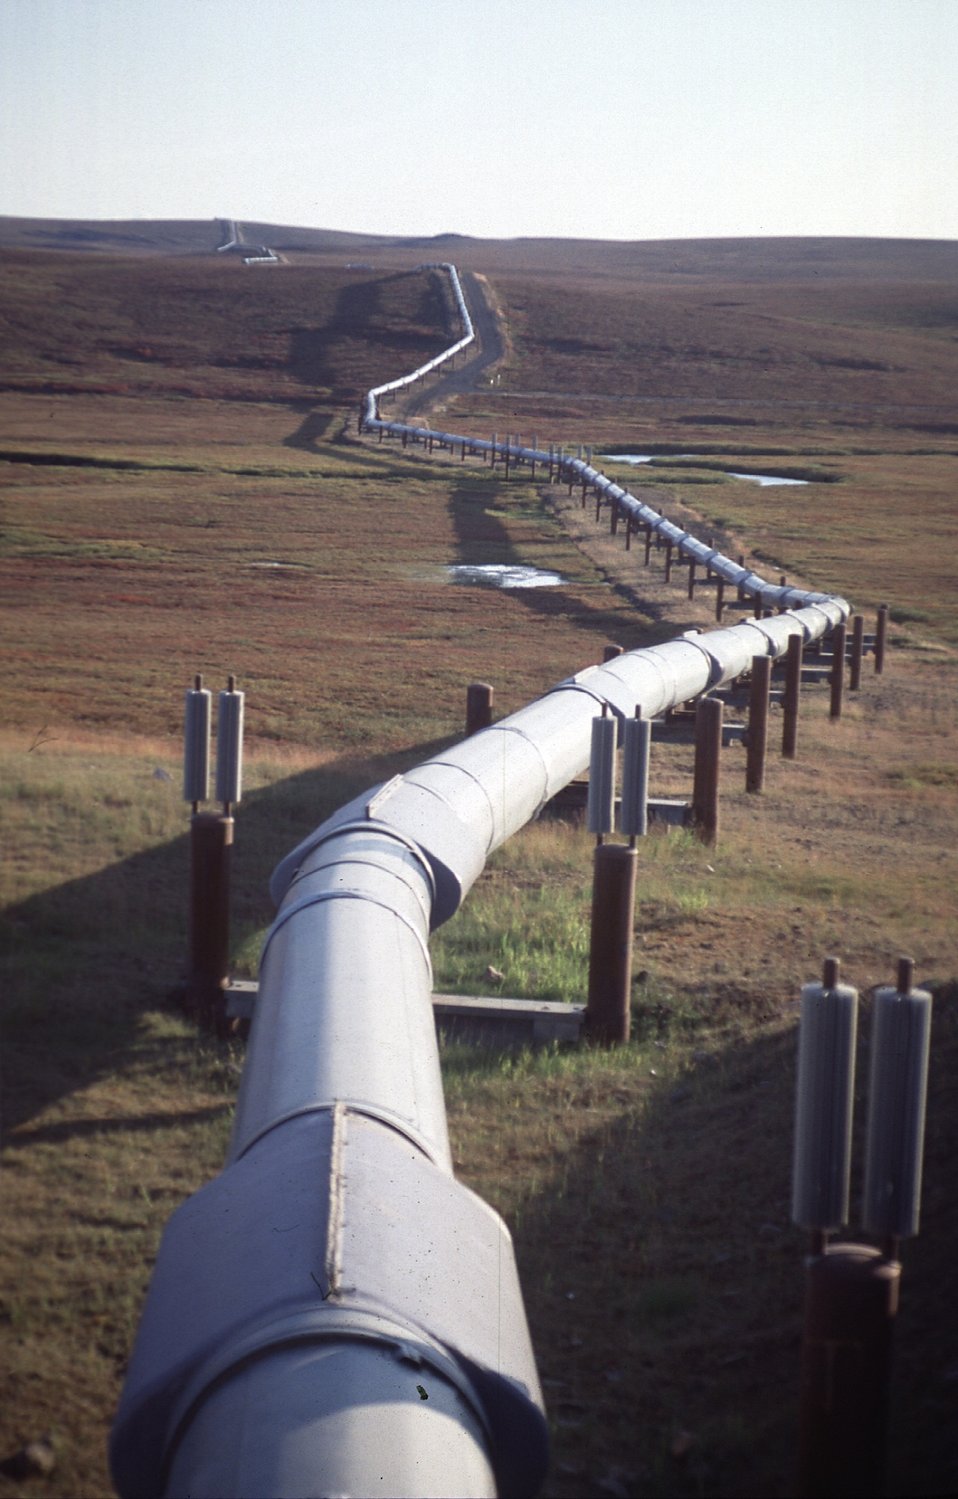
Trans-Alaska Pipeline, Dalton Highway